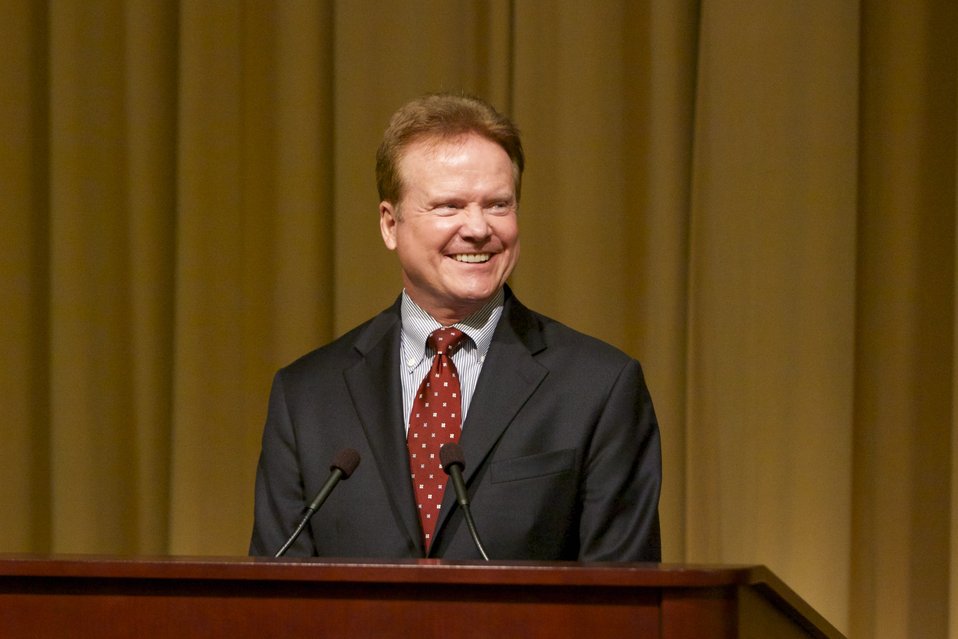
I Heard My Country Calling: A Memoir; James Webb, Former Senator and author, discusses his book